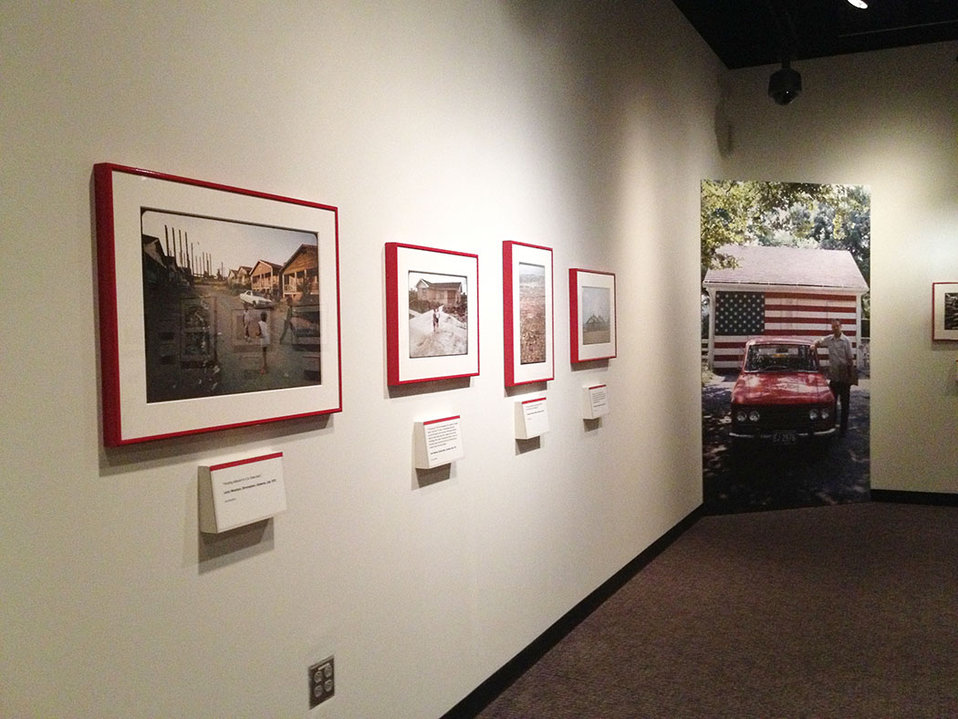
Documerica Photos and Mural

Photo captions and exhibit mural installed for the 'Searching for the Seventies' exhibit.